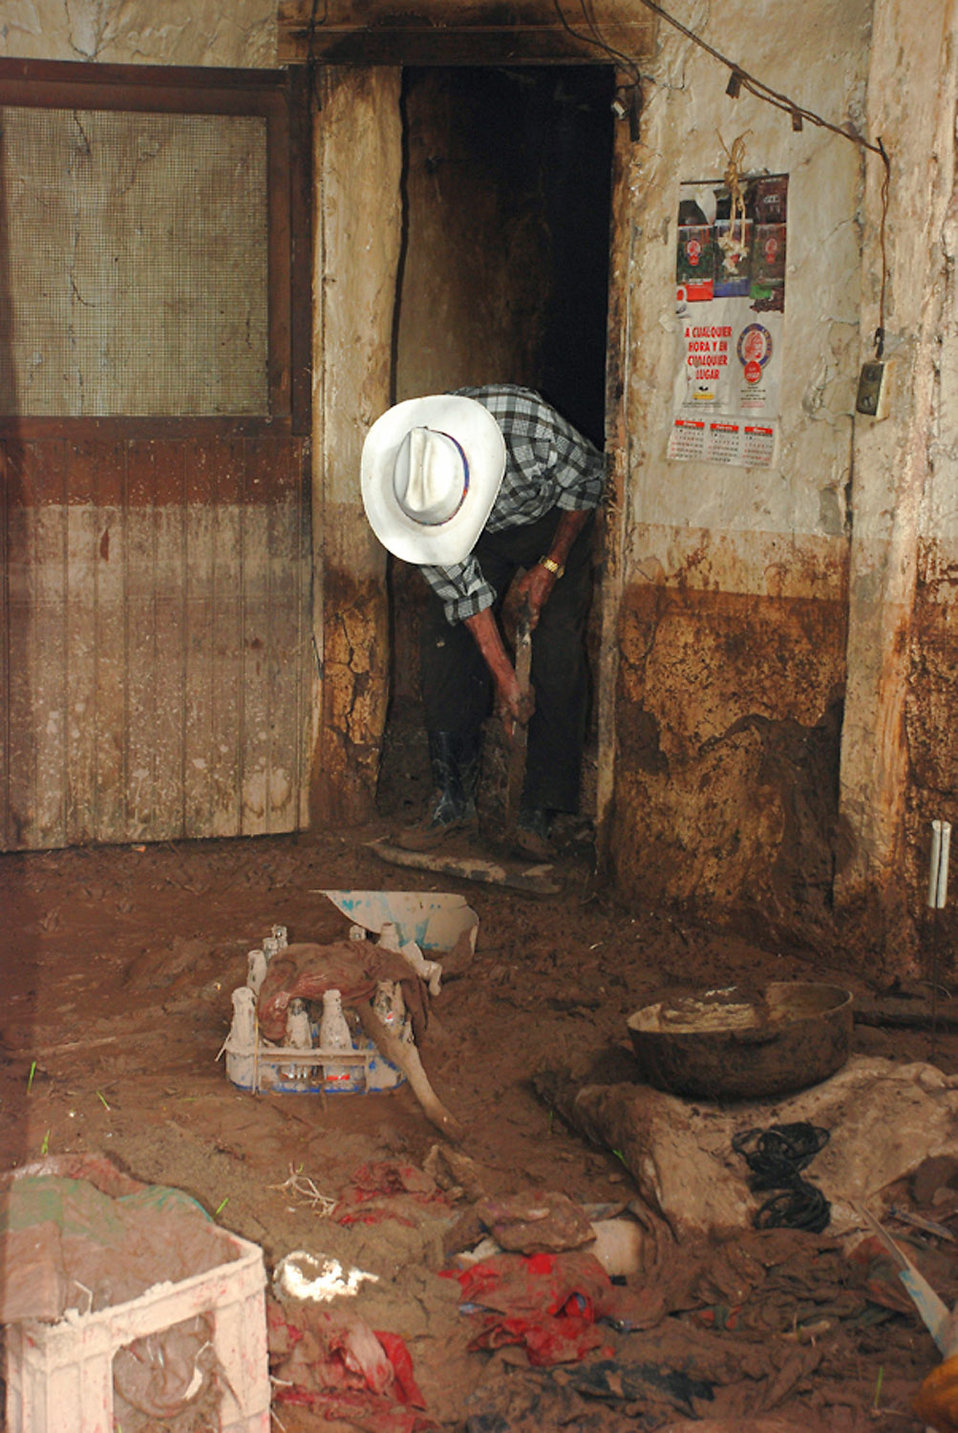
Servicemembers provide water to flood-affected community

An elderly gentleman begins the process of cleaning his home after floodwaters left his home caked in mud and trash Oct. 29 at La Paz, Honduras. The flooding from a tropical depression in Honduras affected several thousand across Honduras. In this community near Soto Cano Air Base, their well water was left undrinkable. Servicemembers from Joint Task Force-Bravo went to the community to help them purify their water.